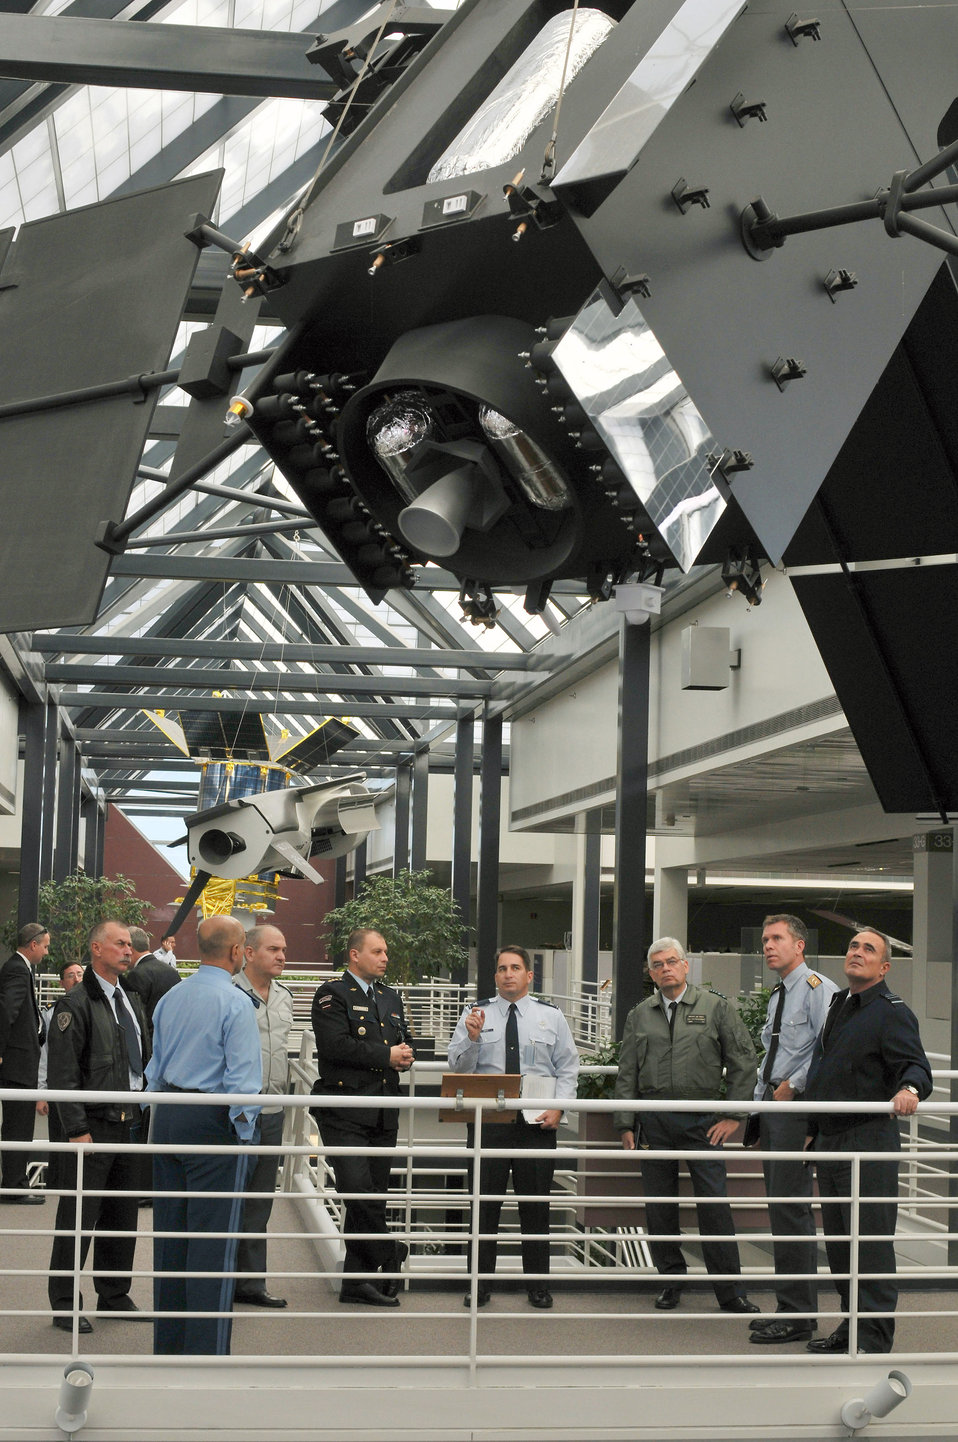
NATO air chiefs discuss common challenges, solutions

Air chiefs from 19 NATO nations view satellite static displays Oct. 7 at the Air Force Space Command Headquarters at Peterson Air Force Base, Colo. The NATO air chiefs toured U.S. Air Force facilities and received briefings at five Air Force bases during their visit.